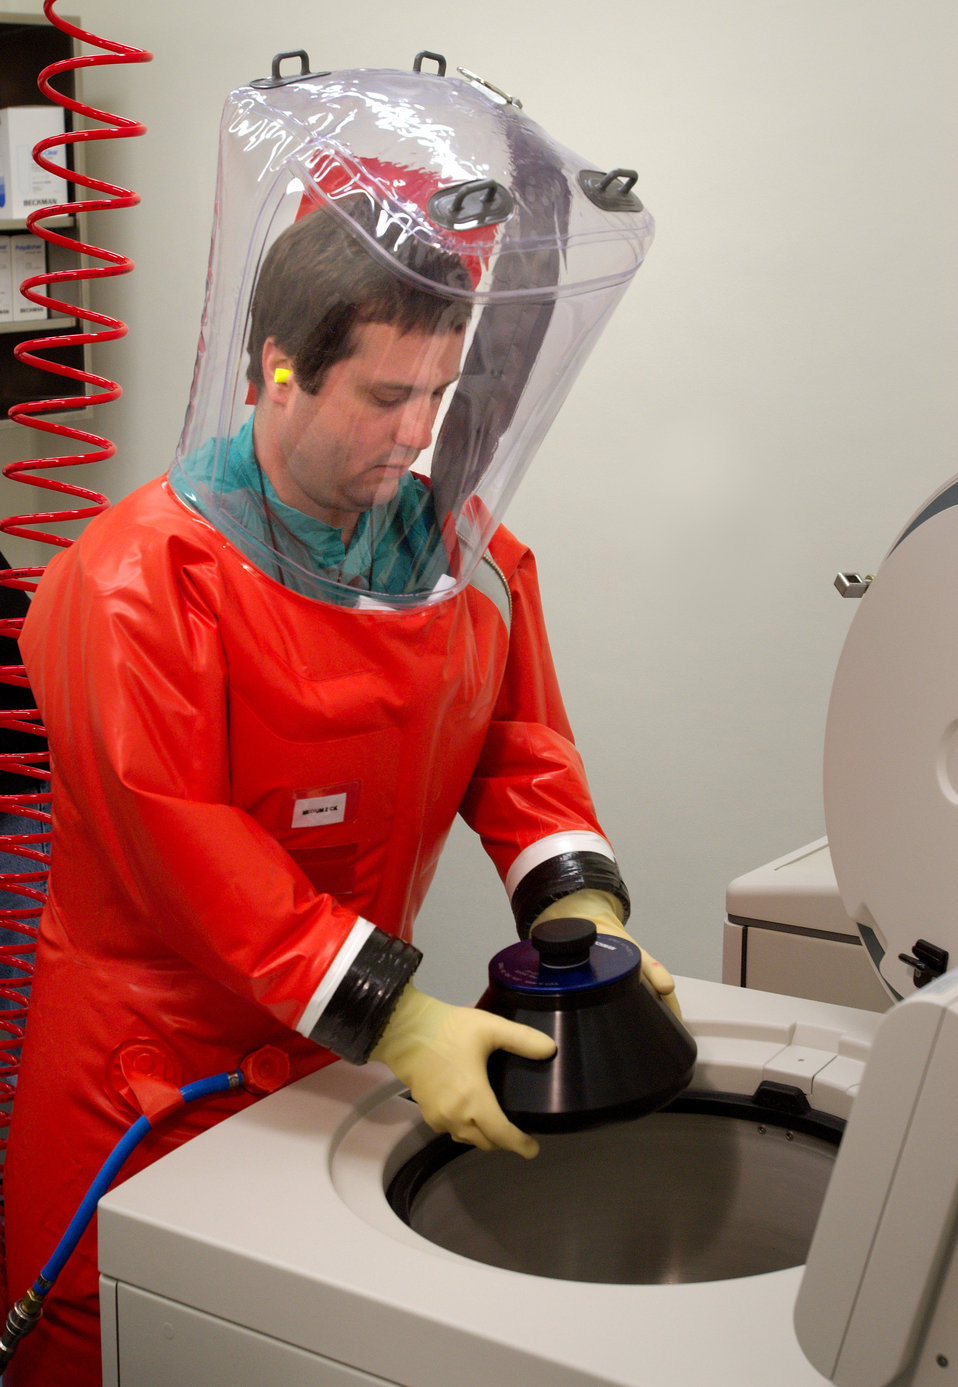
While wearing his air tight safety suite in this 2007 image, a CDC microbiologist was in the process of placing a rotor cuff containing tubes of virus particles and cellular debris into a high-speed centrifuge. This activity was taking place inside the confines of the organization's Biosafety Level 4 (BSL-4) laboratories.